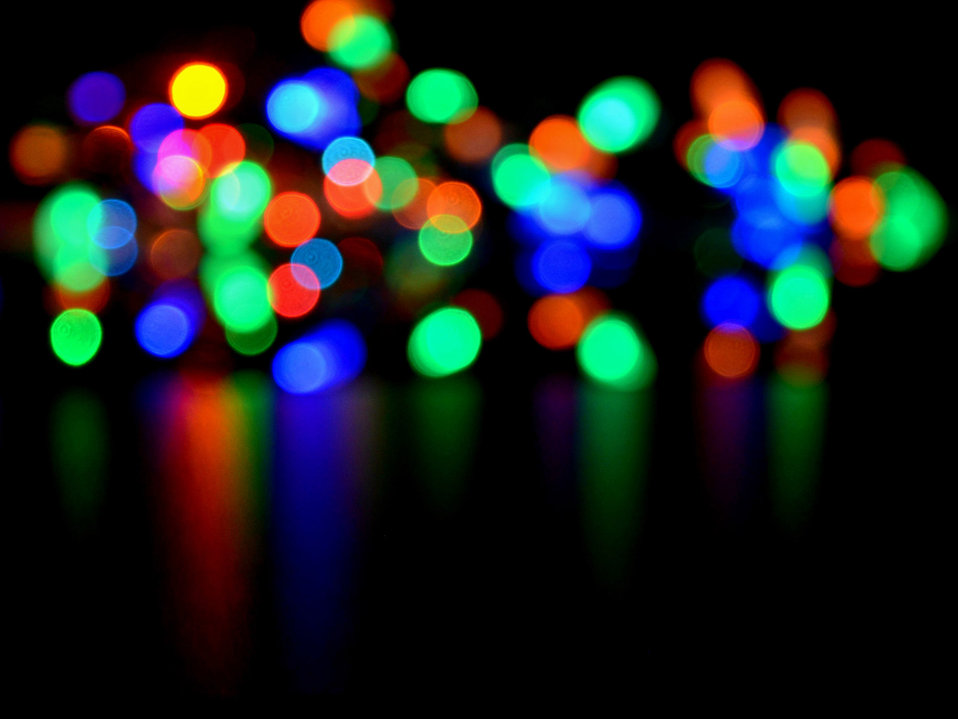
Out of focus

Beautiful bokeh lights.